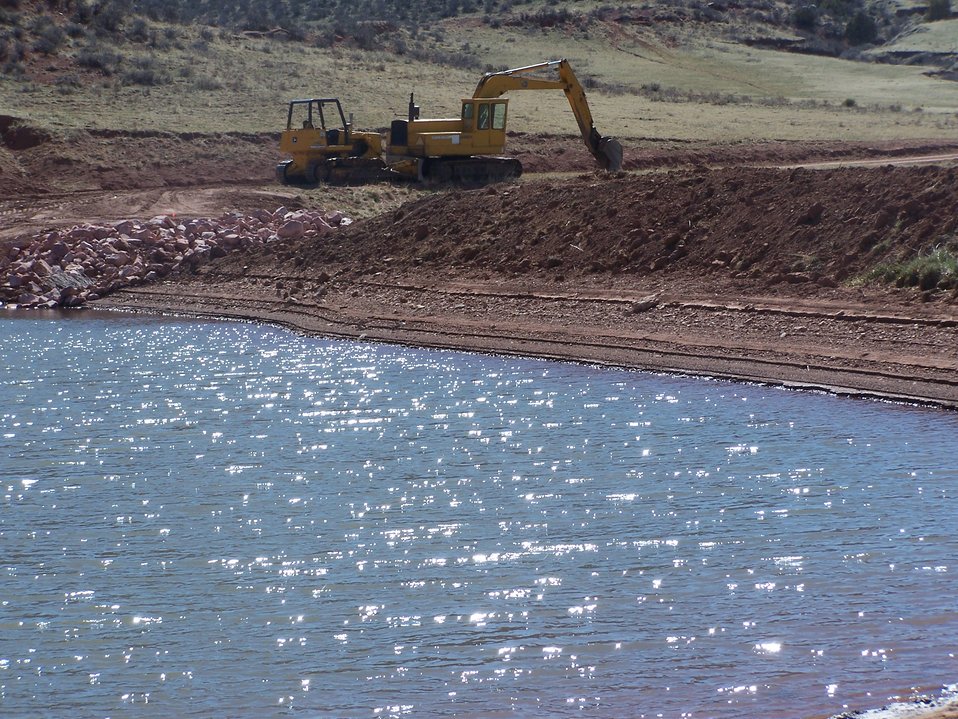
Dam Removal

A contractor removes a livestock dam in Larimer County, Colo.

The project was funded by the U.S. Fish and Wildlife Service’s Partners for Fish and Wildlife program, whose habitat restoration projects are extraordinary engines for the U.S. economy. Restoration Returns: The Contribution of Partners for Fish and Wildlife Program and Coastal Program Projects to Local U.S. Economies finds that, in working directly with partners to implement vital on-the-ground habitat restoration, Service programs created more than 3,900 jobs in Fiscal Year 2011, generating a total economic stimulus of $327.6 million.

The “restoration economy” is a subset of green jobs that includes such industries as heavy equipment providers and operators, plant nurseries, landscape architects, and construction companies, among other firms.

Download the entire report at: www.fws.gov/home/restoration returns.html.